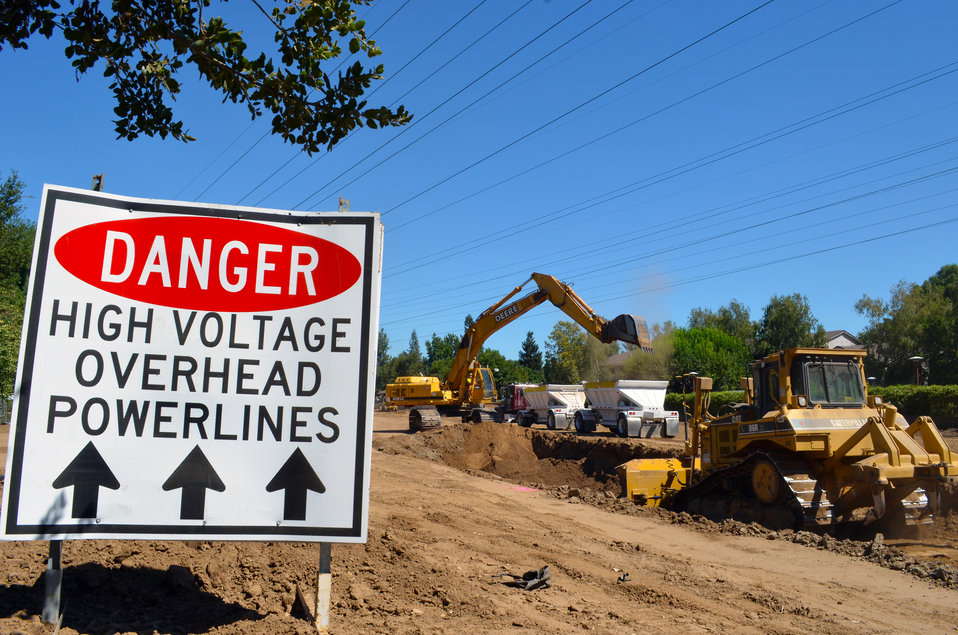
Crews excavate a haul route next to an American River levee

A danger sign reminds contractors to be wary of high-voltage power lines as crews excavate a haul route next to a levee along the American River’s north bank in Sacramento, Calif., Aug. 28, 2012. The haul route will be used for loading material into trucks at a lower and safer height, keeping construction equipment away from the overhead power lines. To accommodate the large levee equipment and minimize the impact to local residents, the power lines will be de-energized for the nighttime-only work scheduled from September 10-15. Construction of a 900-foot seepage cutoff wall, partially located under the power lines, will commence at that time. The work is part of a joint flood-risk reduction effort between the Corps, the state of California’s Central Valley Flood Protection Board and Sacramento Area Flood Control District.